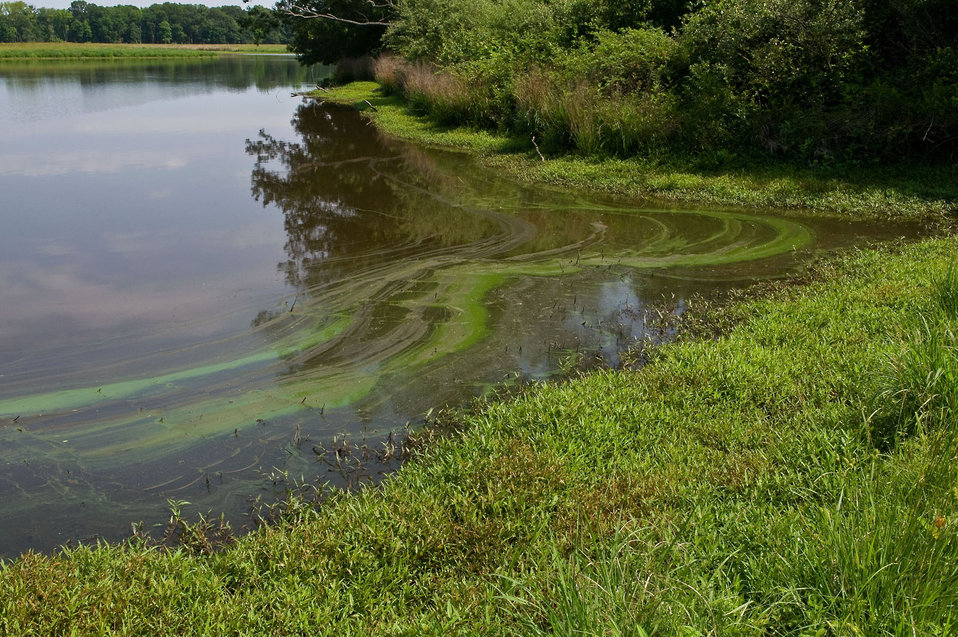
July 12, 2013 - Sassafras River, VA Algal Bloom

Nitrogen and phosphorus support the growth of algae and aquatic plants, which provide food and habitat for fish, shellfish and smaller organisms that live in water. When too much nitrogen and phosphorus enter the environment - usually from a wide range of human activities - the air and water can become polluted. Excess nitrogen and phosphorus cause an overgrowth of algae in a short period of time and cause what is generally known as an algal bloom. Too much nitrogen and phosphorus in the water causes algae to grow faster than ecosystems can handle. Significant increases in algae harm water quality, food resources and habitats, and decrease the oxygen that fish and other aquatic life need to survive.